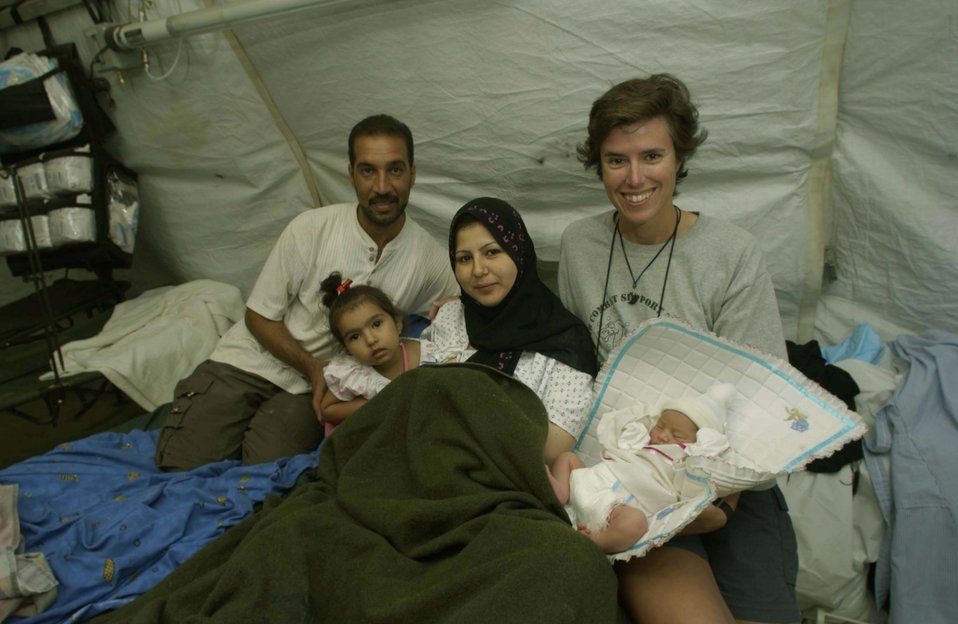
Baby Malach

TALLIL AIR BASE, Iraq -- Army Maj. (Dr.) Elizabeth Shanley (right) spends time with the Alrikabi family (left to right) Moslem, Al'aa, Rafah and baby Malach. Shanley, a physician with the 332nd Expeditionary Medical Group, delivered Malach, the first child born here.